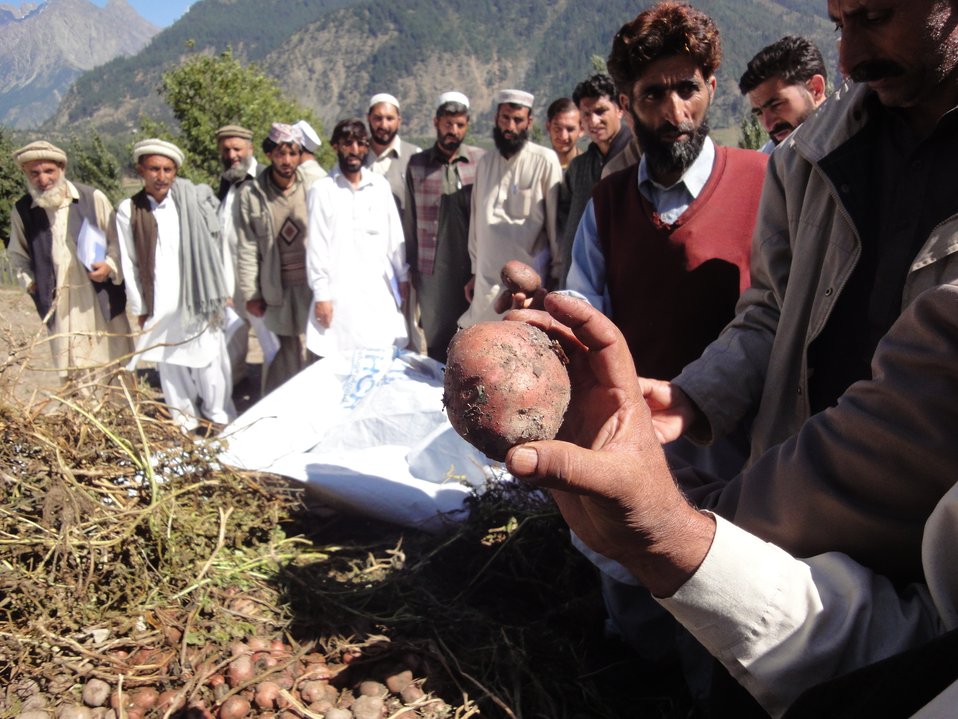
USAID Supports Potato Farmers from Swat - 2